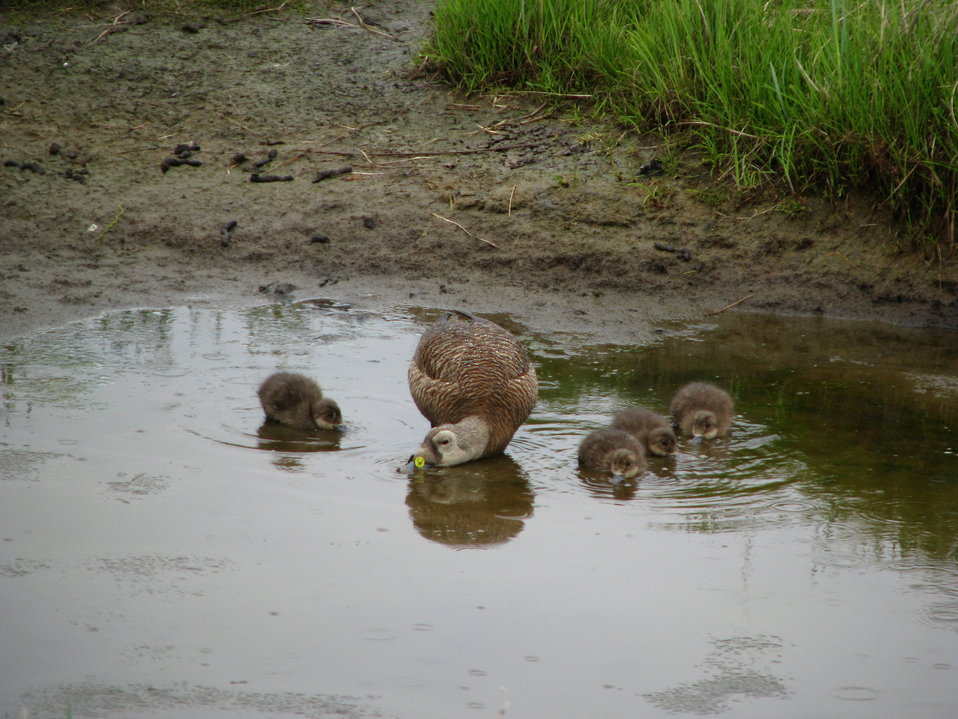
Spectacled Eider and her brood feeding on inverebrates

Yukon Delta NWR
Invertebrates are a main food source for Spectacled eider females and their broods on the breeding grounds.